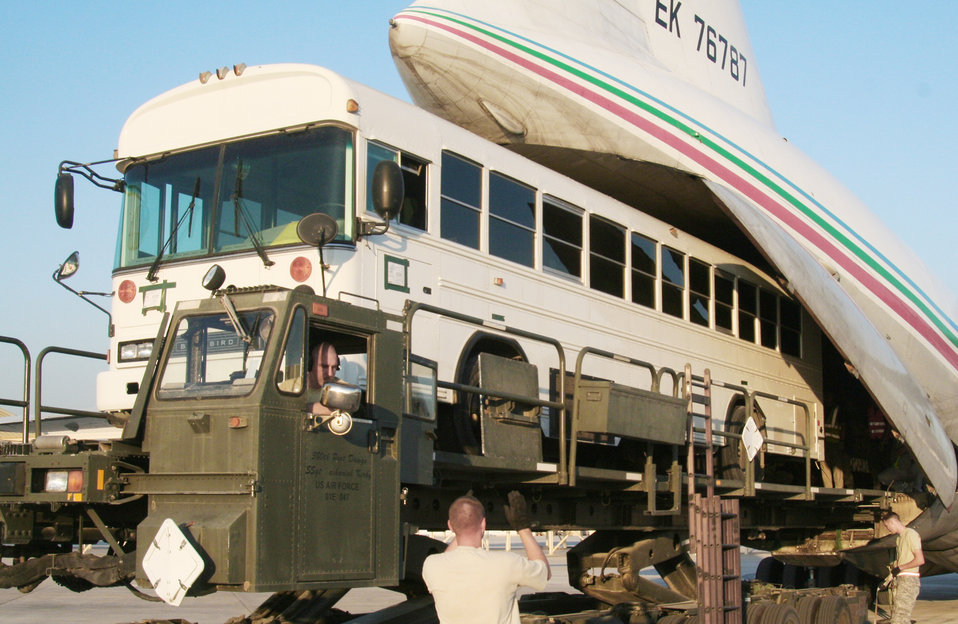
Deployed aerial porters load American buses on Russian-made transport

Air transportation Airmen load a 44-passenger bus onto a Russian-built IL-76 transport plane during operations Dec. 30, 2009, at an air base in Southwest Asia. The bus was one of two that were loaded on the IL-76 for transport to Afghanistan. The Airmen are assigned to the 380th Expeditionary Logistics Readiness Squadron.